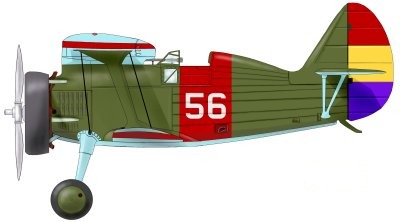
The I-15 Polikarpov No 56 flown by Frank Glasgow Tinker as part of the Yankee Squadron of the Spanish Republican Air Force, during the Spanish Civil War.